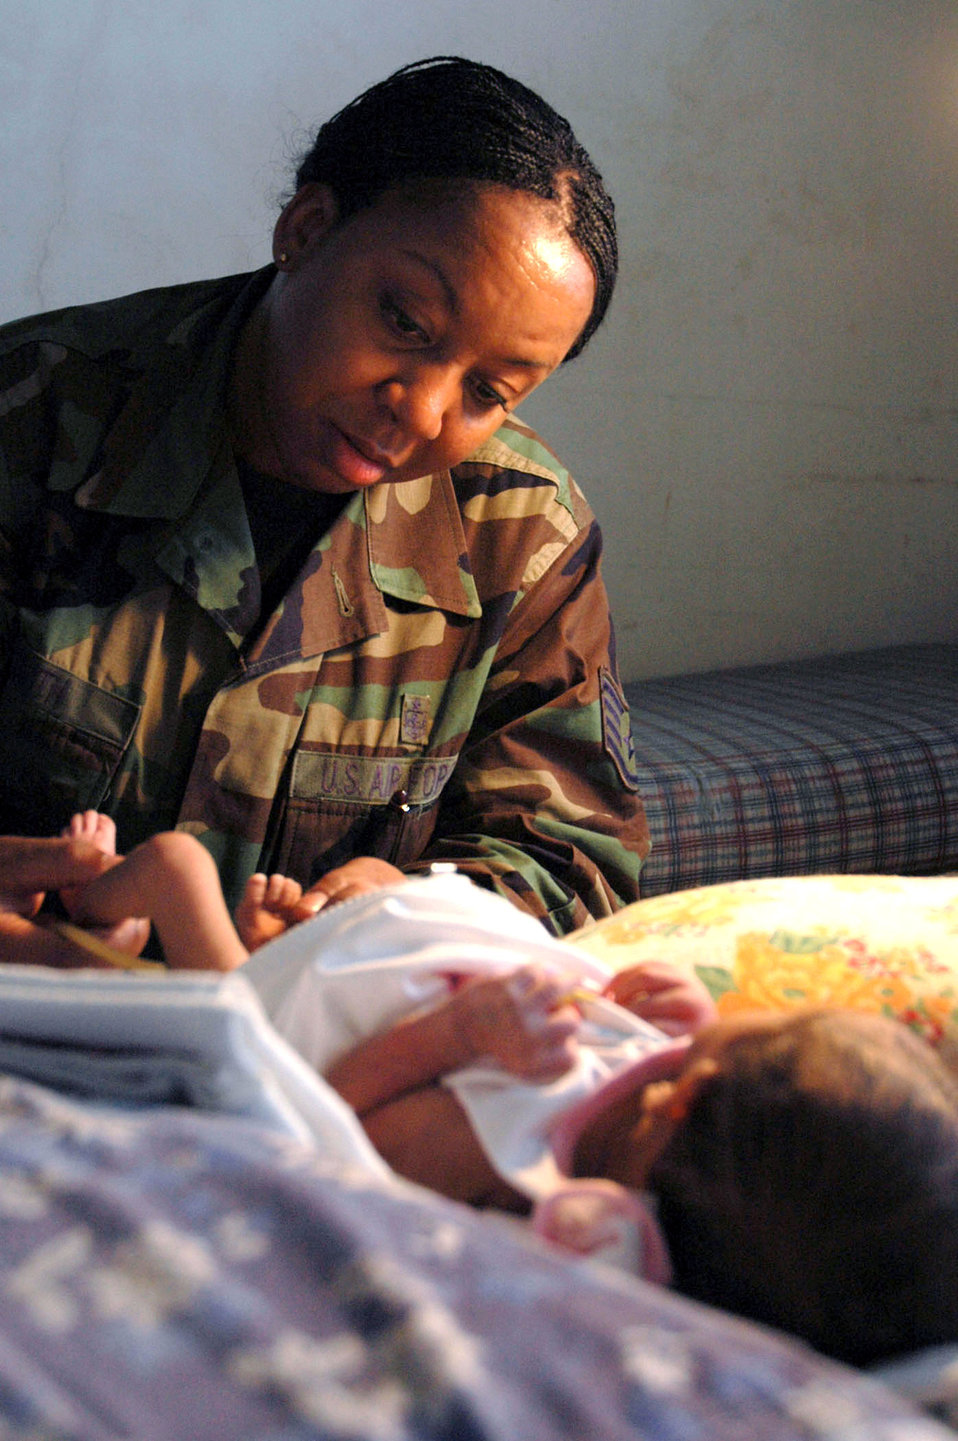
Aboard the USNS Mercy

Staff Sgt. Willie Smith examines a patient in the pediatric ward at the Zamboanga Medical Center in the Philippines on Wednesday, May 31, 2006. Sergeant Smith is one of several Air Force medical professionals aboard the U.S. Navy hospital ship, USNS Mercy. The crew is conducting humanitarian and civic assistance in South and Southeast Asia and the Pacific Islands.